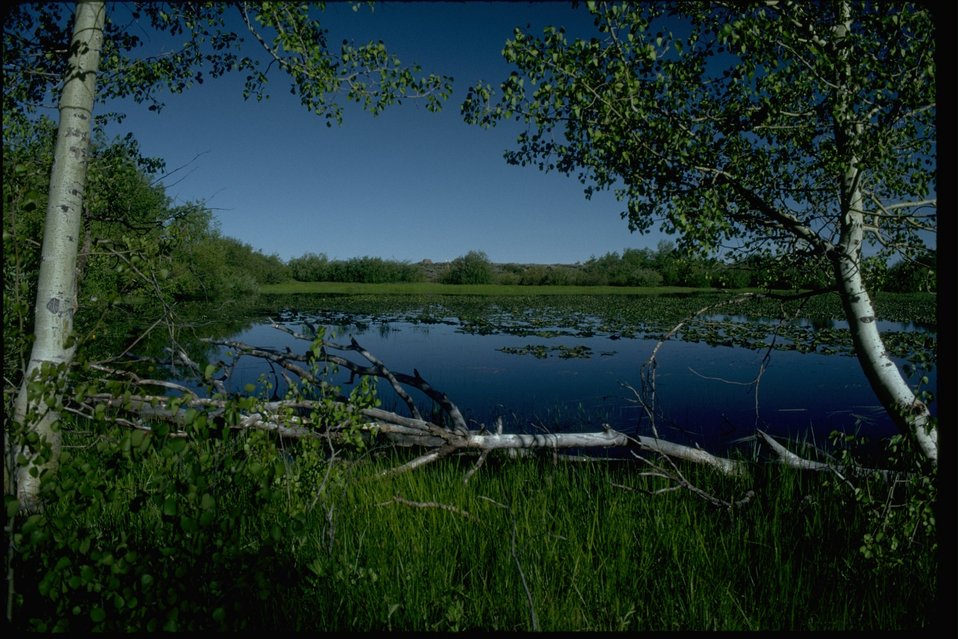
Lily Lake, a high elevation wetland, at Steens Mountain, Oregon.